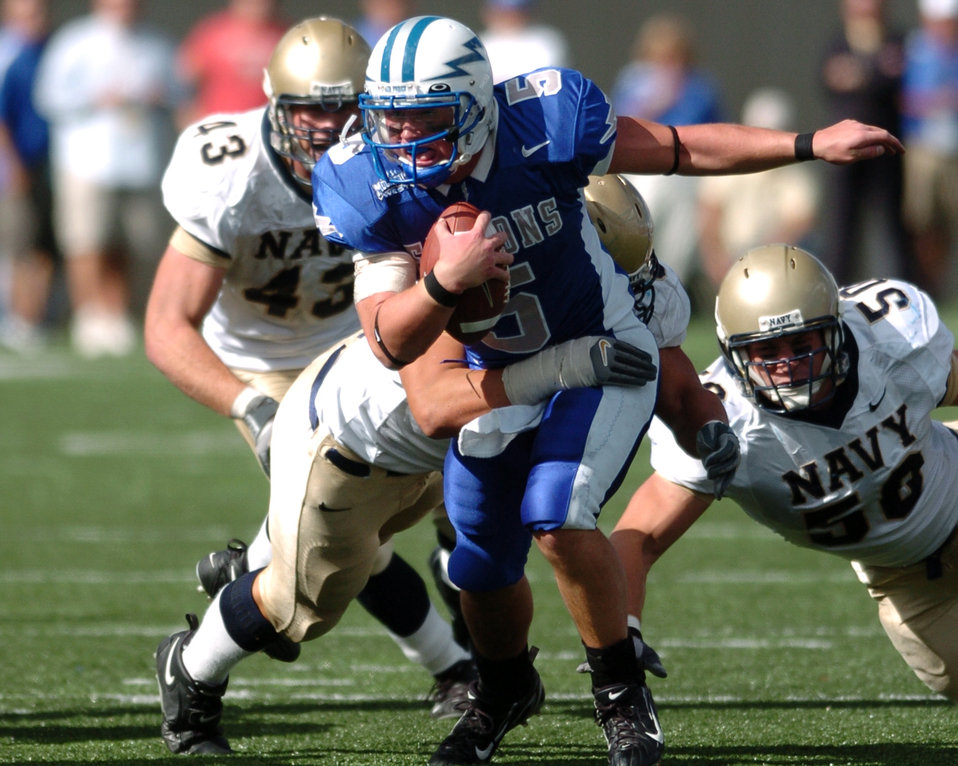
Avoiding a sack

Air Force quarterback Shaun Carney breaks through Navy tacklers Saturday to scramble back to the original scrimmage line and avoid a fourth-quarter sack. Carney rushed for 57 of the Falcons’ 193 total yards on the ground. Navy won, 24-17.